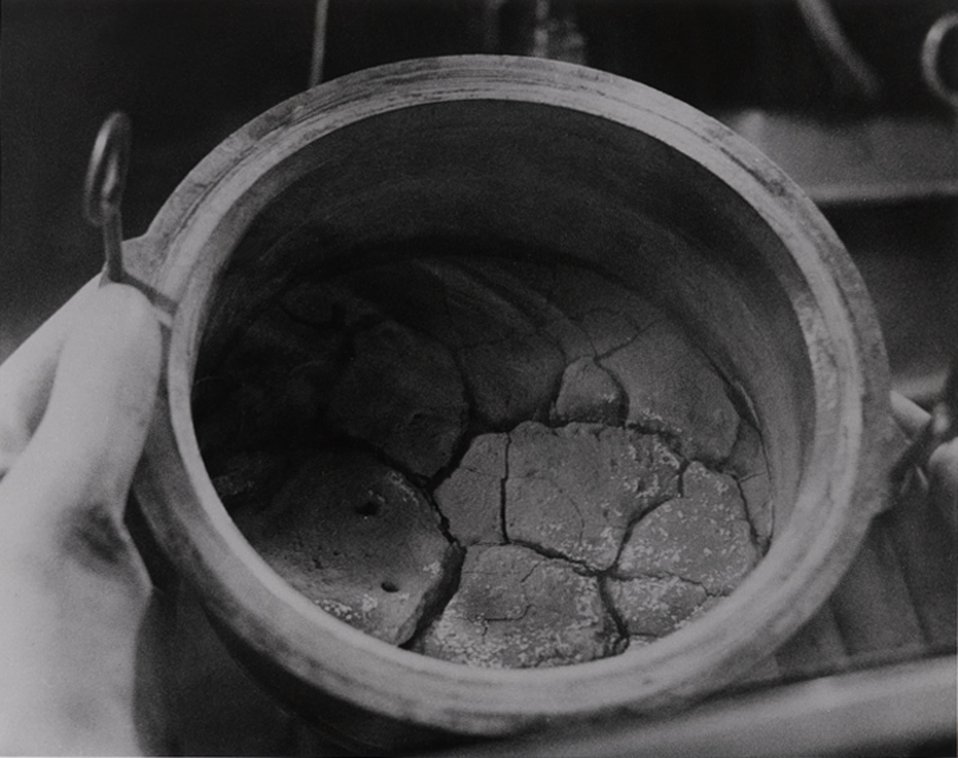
Plutonium 238, a man-made radioactive material produced at the AEC's Savannah River Plant near Aiken, SC.